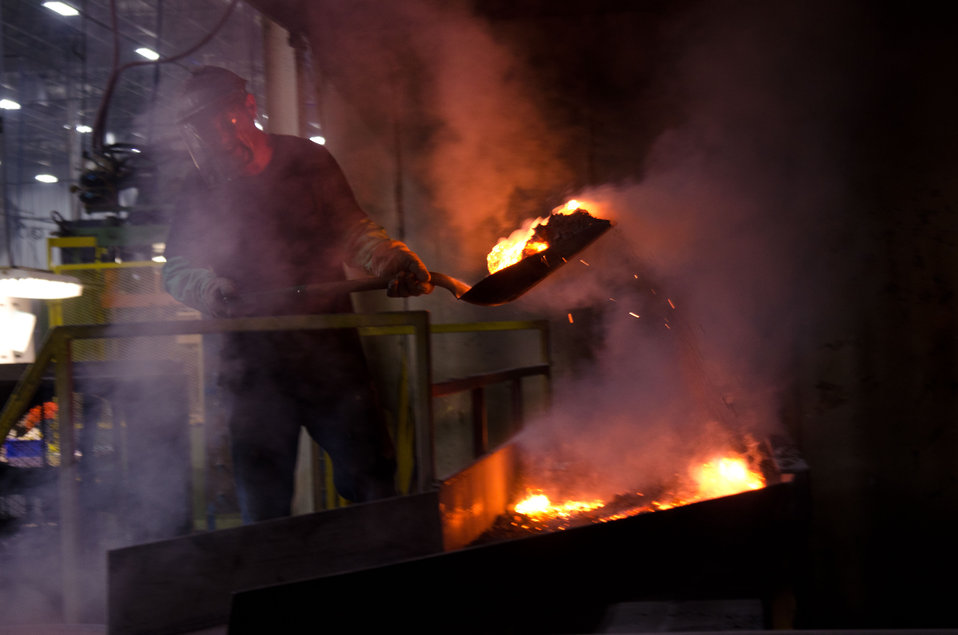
Melter operator Carl Welborn faces flames and intense heat to forklift foundry ingots into; and shovels slag out of a furnace crucible at Port City Group’s Port City Castings Corporation, manufacturer of high-pressure aluminum die-castings, mostly for the automotive industry, in Muskegon, MI, facility on Wednesday July 20, 2011. Port City Group boosted its employment by 12 percent over last year thanks to two Rural Business Guaranteed Loans totaling $9.6 million. In its 80,000 sq. ft. facility, machines that range from 800 – 1,600 tons, and cast A380 aluminum alloy products from melted ingots of aluminum, into automotive components of U.S.A. made vehicles. The process features a variety of robotic presses; computer controlled machining; quality control facility; and complete measurement and testing laboratory. In 2009 banks were backing out of loans for PCG equipment purchase agreements. The U.S. Department of Agriculture (USDA) loan guarantee helped make the loan possible with its guarantee. PCG obtained the needed robotic and other equipment. This resulted in a stable workforce that has since grown. When asked about their USDA experience, Port City Group Sales Manager Laura LaGuire said, “It was great! They were very helpful. Everything that came up was handled smoothly, the money came in place when it was needed, and it was a very smooth transition.”